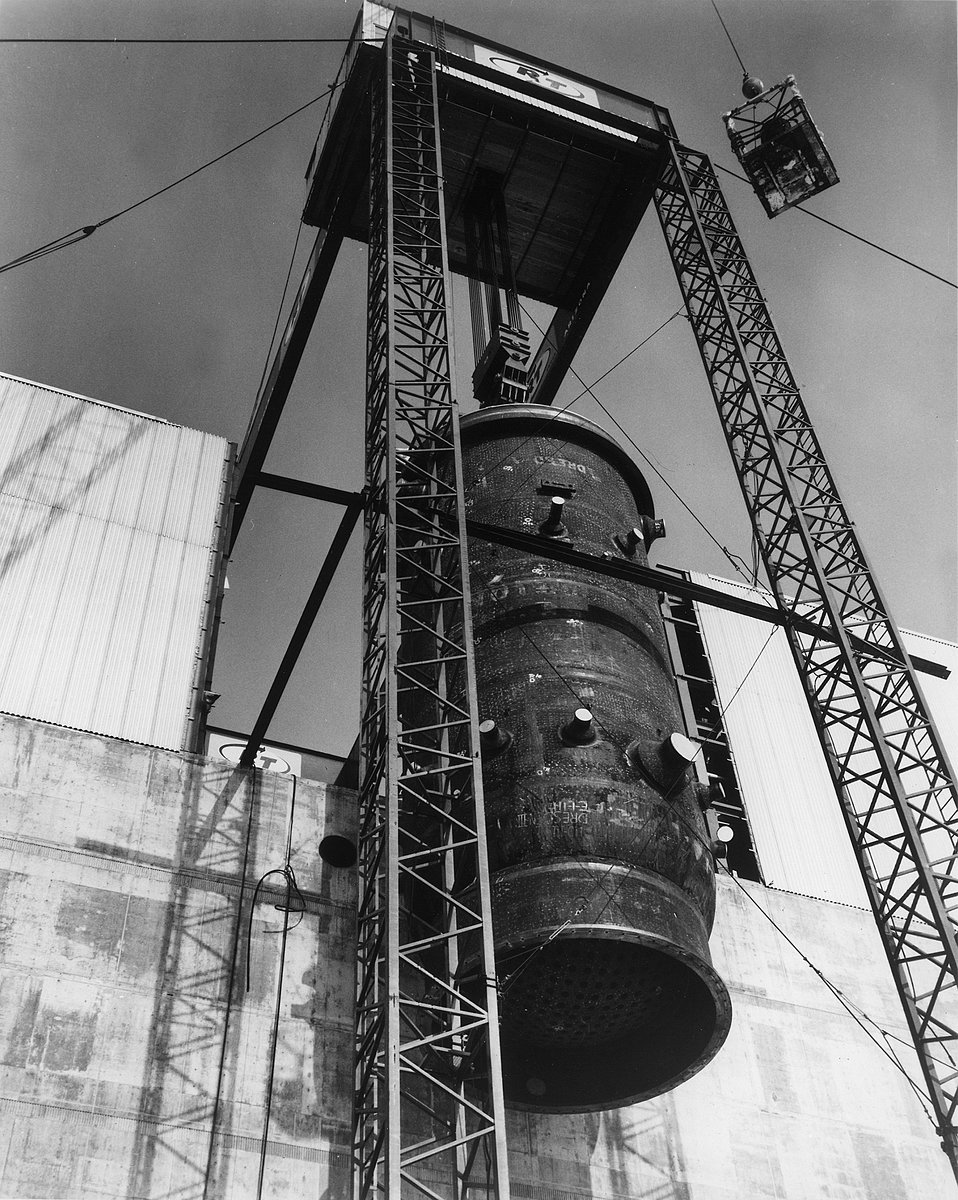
Reactor vessel for Unit 3 at Dresden nuclear power station is hoisted to the roof of reactor building at the Commonwealth Edison Company plant near Morris, Illinois. Circa 1970.